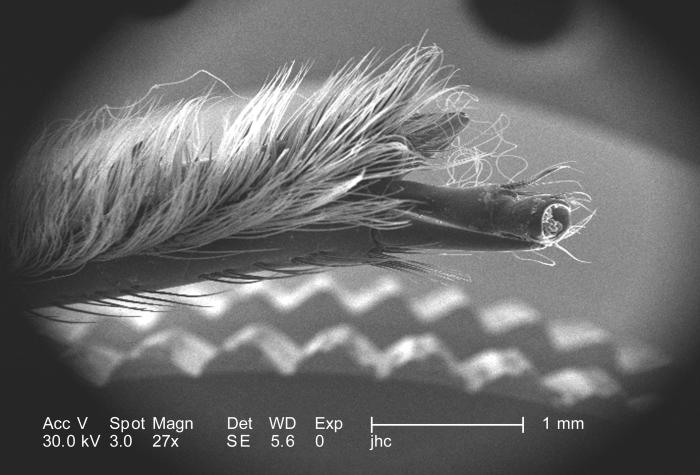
Under a magnification of only 27X, this scanning electron micrograph (SEM) depicted some of the exoskeletal morphologic characteristics displayed on the head region of an unidentified beetle found deceased in the suburbs of Decatur, Georgia. In this particular view, the proximal aspect of what is believed to be one of the insect's two maxillary palps is displayed, at a point where the palp attaches to the maxilla. The palps act both as feelers, which means that they're sensorial in nature, as well as organs of food manipulation. The beetle is able to use these palps to position its foods in the most opportune position for chewing, and grasping with its mandibles. See PHIL 10062, 10063, and 10065, for addition views of this structure.